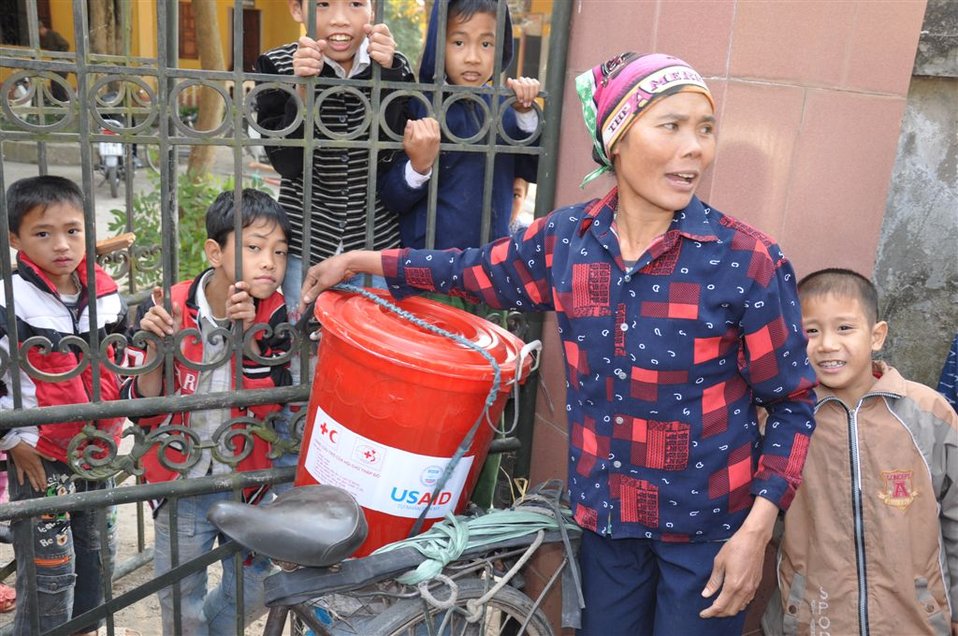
USAID provides household kits to families affected by flooding near Hanoi